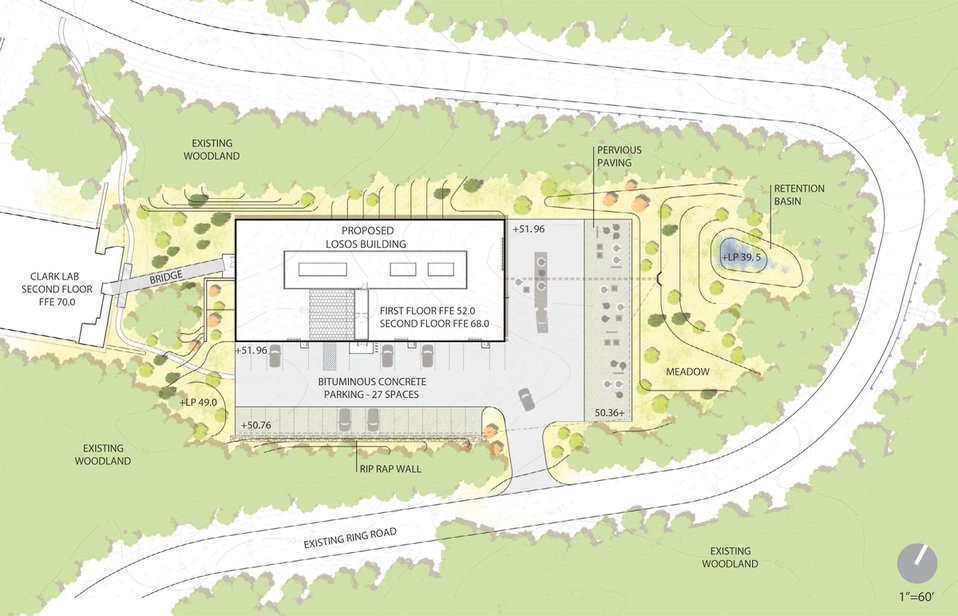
Recovery Act Grant; Woods Hole Oceanographic Institution

Site plan for the new Laboratory for Ocean Sensors and Observing Systems (LOSOS) at the Woods Hole Oceanographic Instituion.